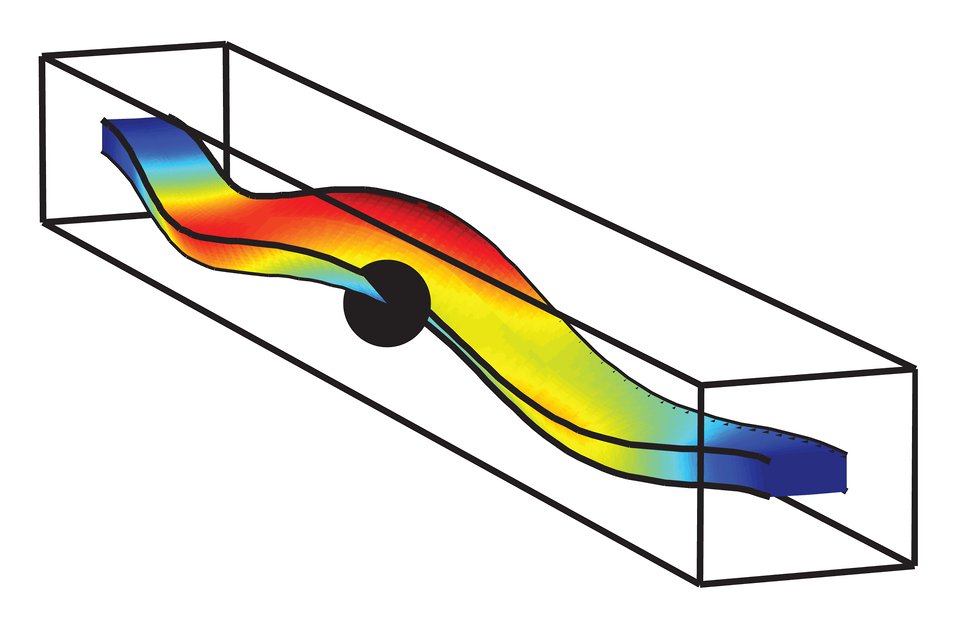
New JILA Apparatus Measures Fast Nanoscale Motions

This slow-motion simulation of the JILA nanoscale motion detector shows the wiggling of a floppy metal beam, just 100 nanometers thick, as it is struck by an electric current at the dot. Red indicates the greatest change in position from the rest state.